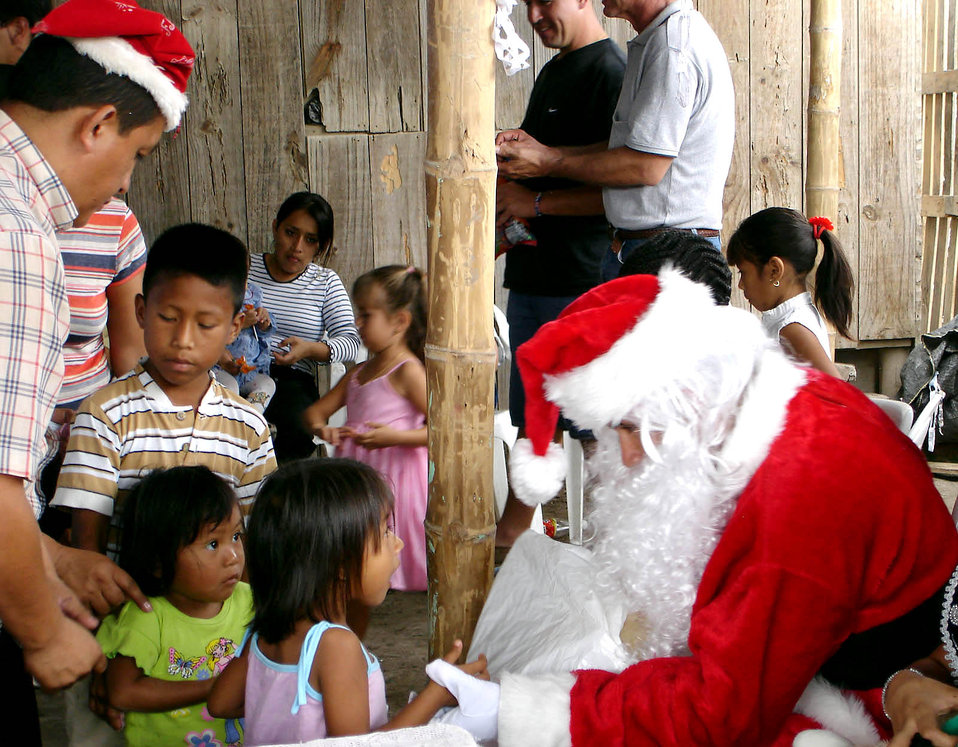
Santa visits Ecuador

MANTA AIR BASE, Ecuador -- Santa Claus hands out toys and candy to children at an elementary school. Airmen will be giving 1,800 toys to children at schools, hospitals and community organizations for the holidays.